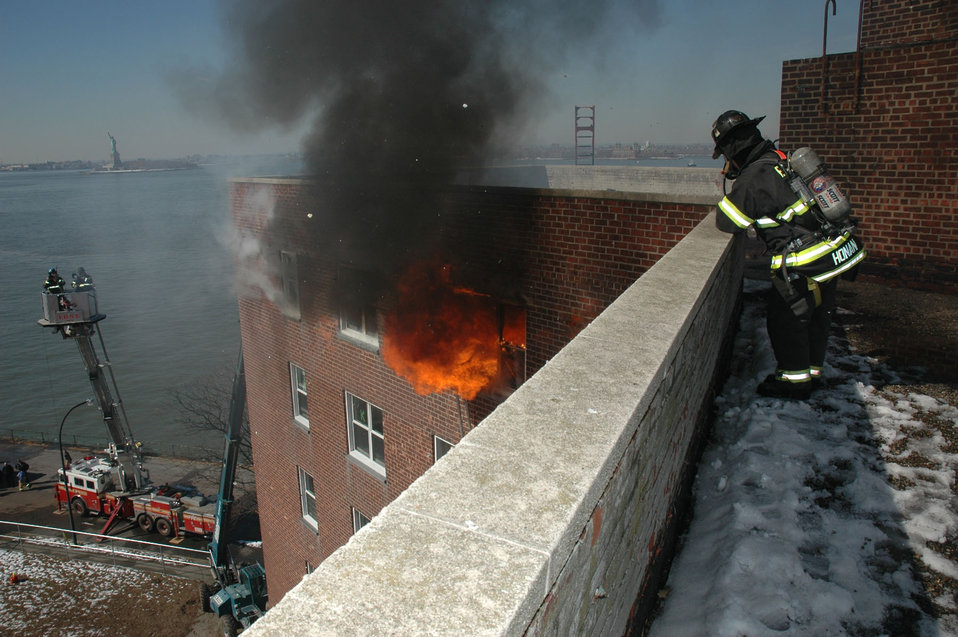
High Rise Fire Study; Wind-Driven Fires

An abandoned apartment building on Governor's Island, New York, provided a real-life laboratory for fire researchers studying wind-driven fires and tactics to combat them. The Statue of Liberty can be seen to the left of the island.